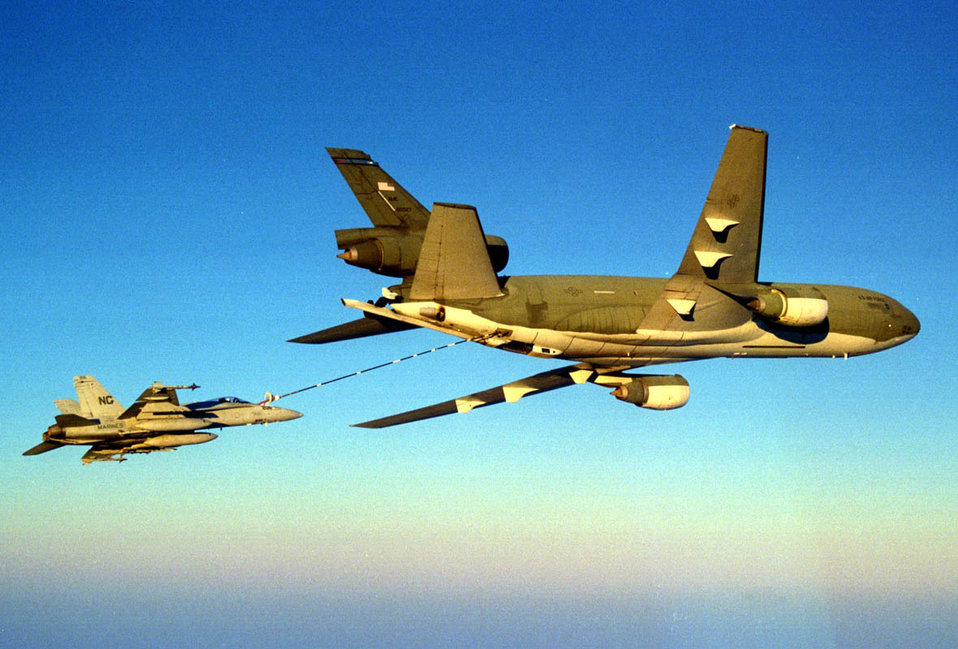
Helping the Marines

OVER KUWAIT -- A KC-10A Stratotanker refuels an F/A-18 Hornet assigned to Marine Fighter Attack Squadron Three One Four, currently attached to the aircraft carrier USS Nimitz.